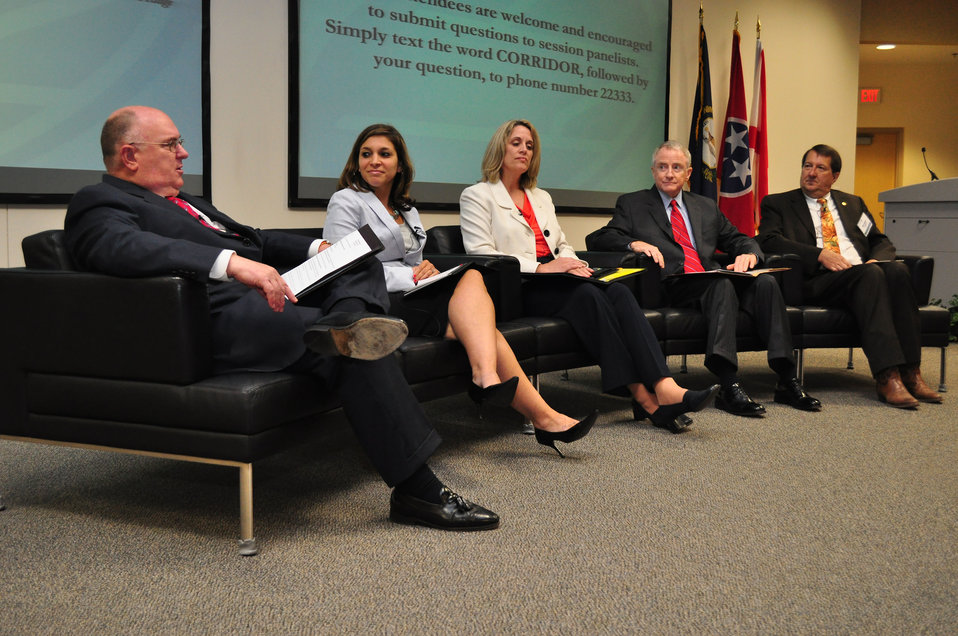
Tennessee Valley Corridor Summit Oak Ridge

13-062 DOE photo Lynn Freeny 5-29-2013 Panel Discussion L to R Wayne Cropp Enterprise Center, Victoria Hirschberg TDECD, Teresa Duncan Roan State, VanMauney Y-12, Mark Watson City Oak Ridge Oak Ridge Tennessee